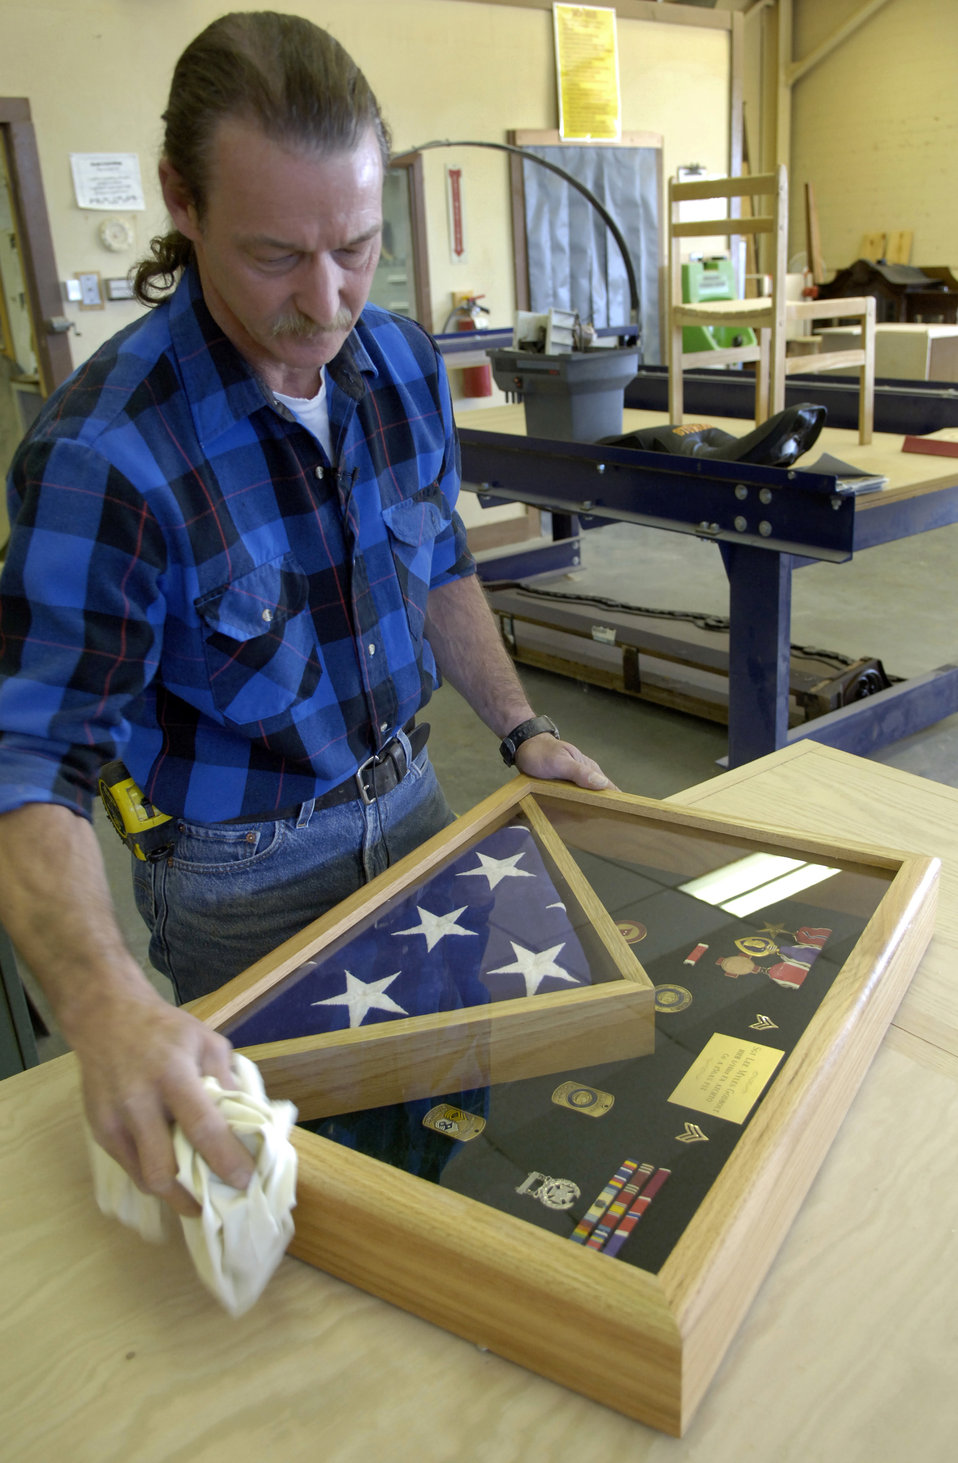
Retired Airman gives Soldier's mother peace

BARKSDALE AIR FORCE BASE, La. (AFPN) -- Retired Tech. Sgt. Mike Jarrett, woodcraft manager here, cleans up the shadow box he plans to present to the mother of Army Sgt. Lee Myles Godbolt. Mrs. Godbolt, a Hurricane Katrina evacuee, lost most of her belongings in the storm, but was able to save the damaged shadow box of her son who was killed in Iraq. Sergeant Jarrett and his wife heard this story on the local news. They both decided they would replace Sgt. Godbolt's shadow box for his mother.